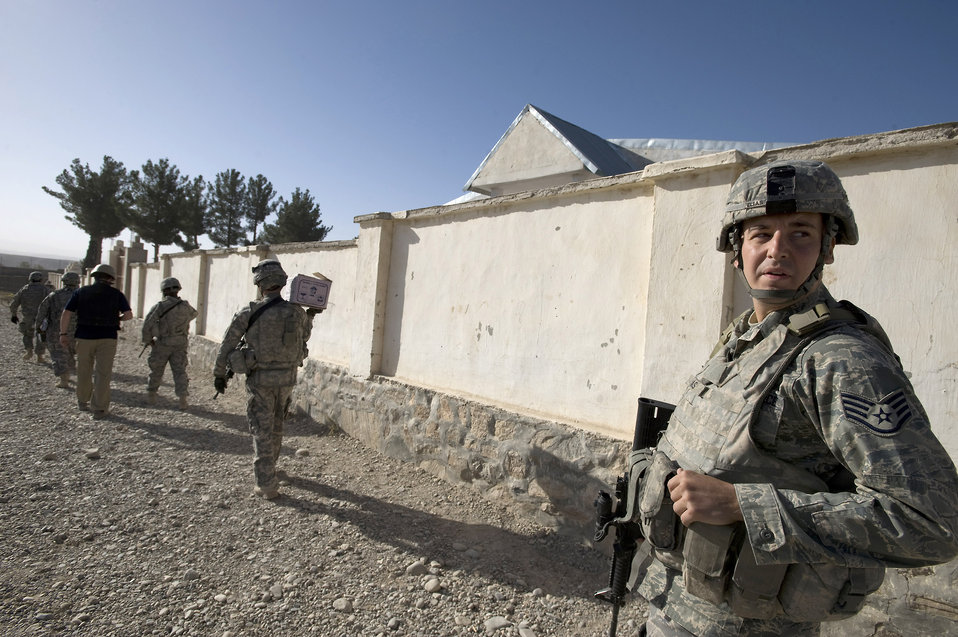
Airman helps make a difference in Afghanistan

Staff Sgt. Don Elias provides security while deployed with the Zabul Provincial Reconstruction Team Oct. 18 in Qalat, Afghanistan. Sergeant Elias is deployed to the PRT as the force protection NCO in charge from Wright-Patterson Air Force Base, Ohio. He is a native of Buffalo, N.Y.